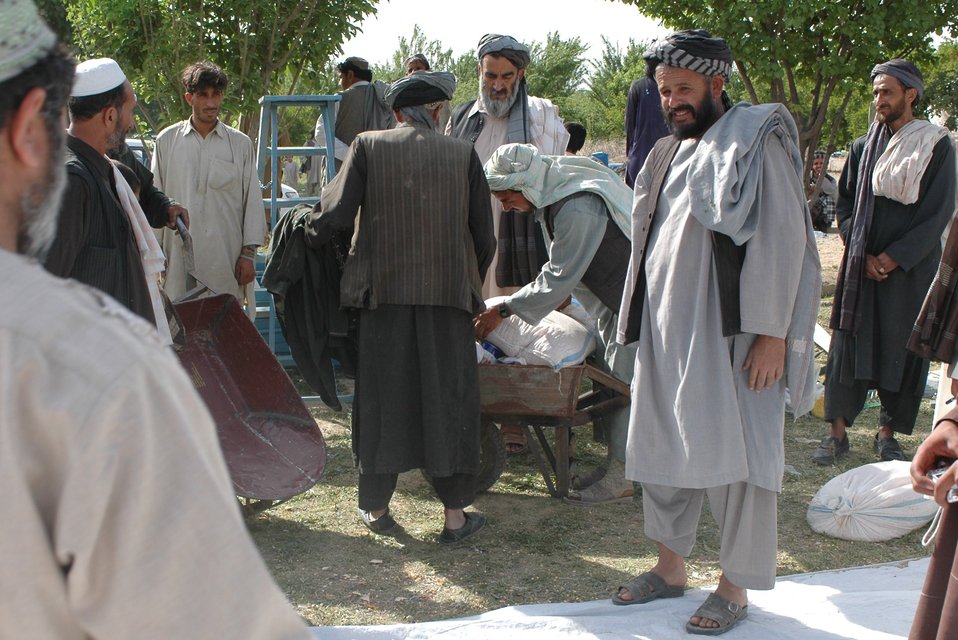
Dr Shah Visits Argandab April 10, 2010